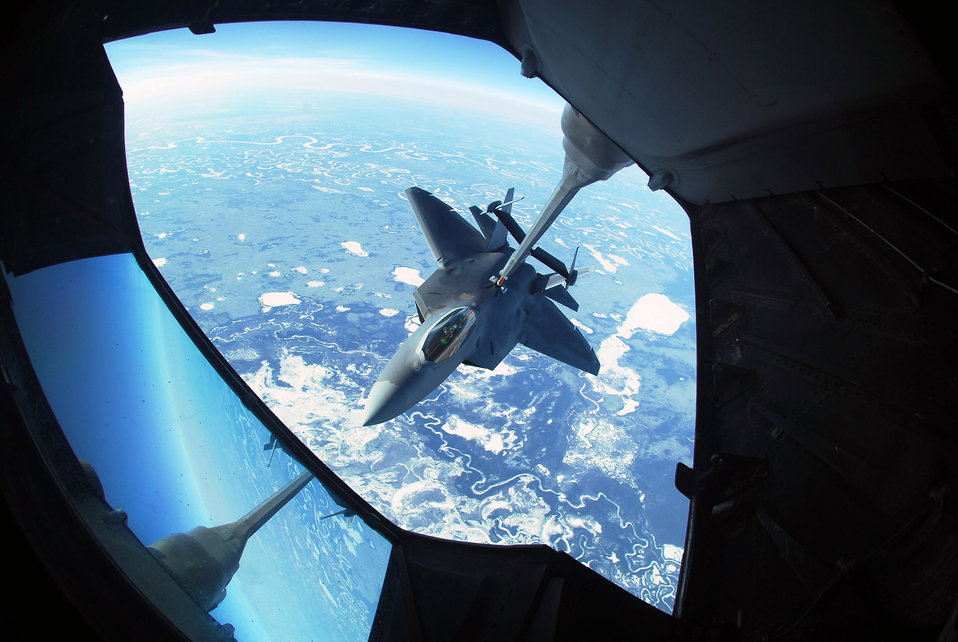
Give it a go...

A KC-10 Extender refuels an F-22 Raptor 26,000 feet over Alaska. The F-22 is assigned to Elmendorf Air Force Base, Alaska.